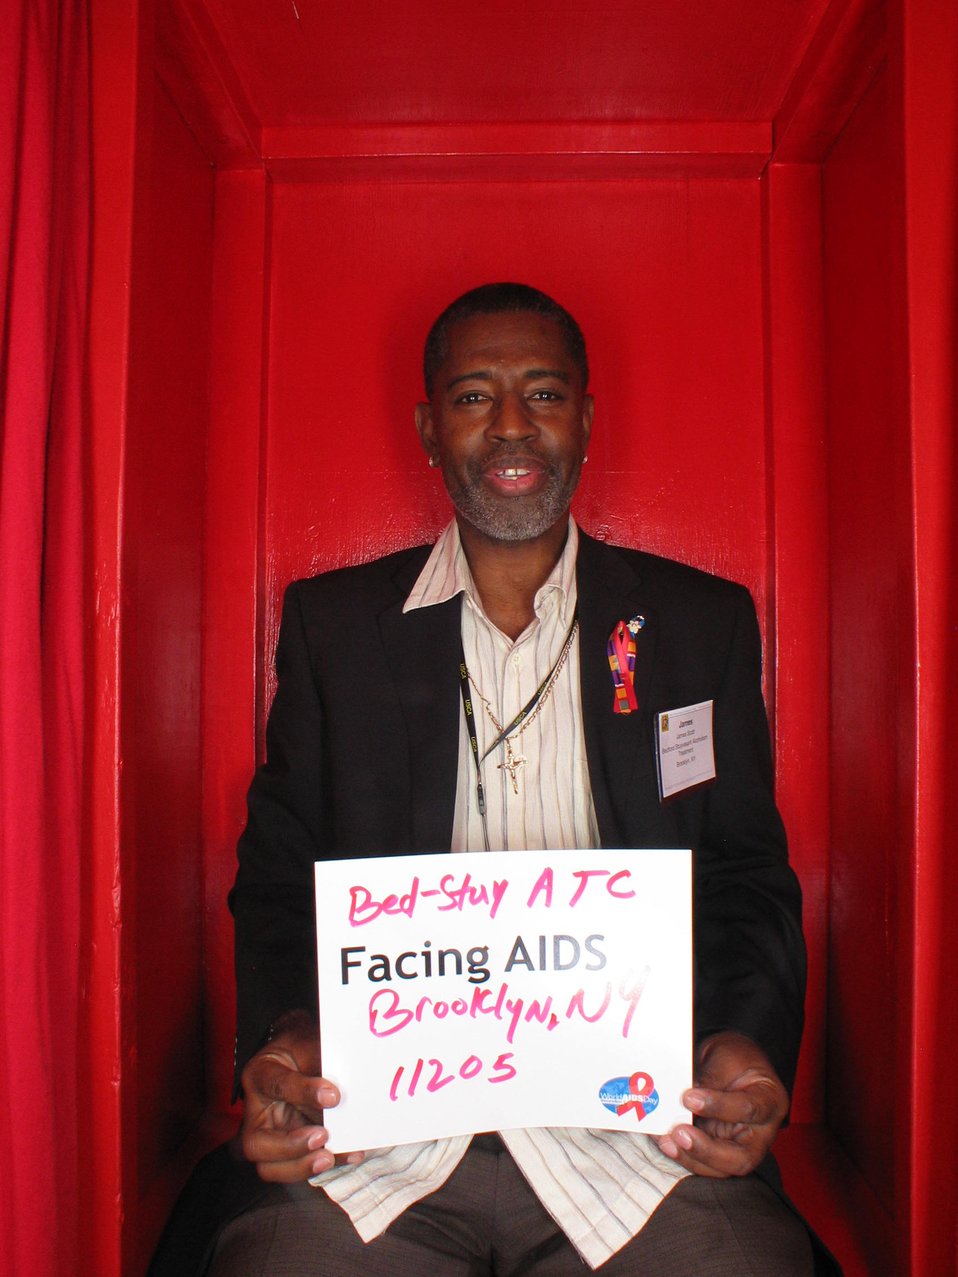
Bed-Stay ATC Facing AIDS